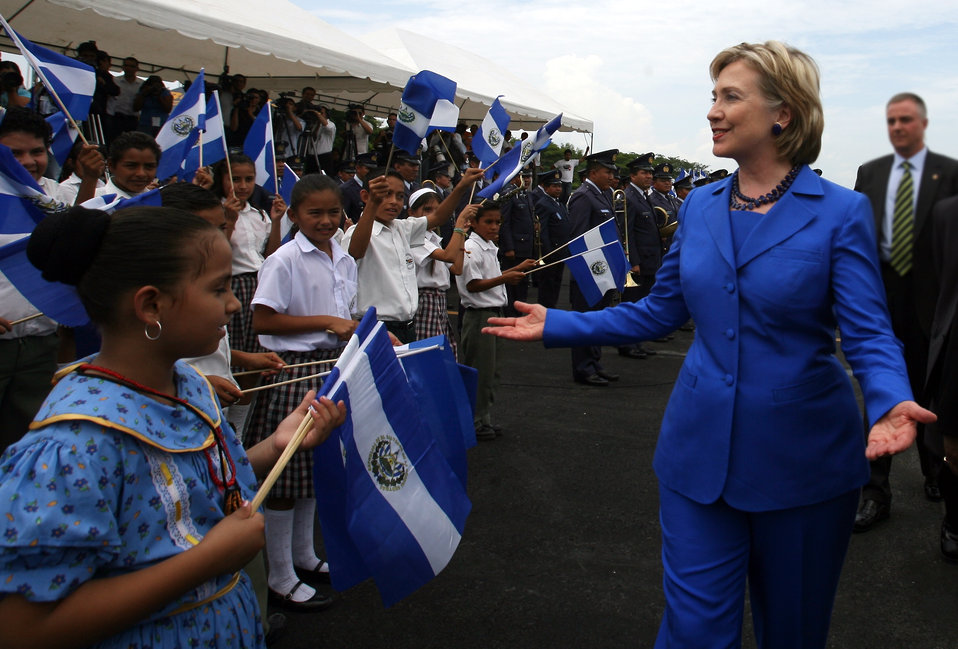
Secretary Clinton Arrives in El Salvador

U.S. Secretary of State Hillary Rodham Clinton greets Salvadoran school children upon her arrival at Comalapa International airport in El Salvador May 31, 2009. Secretary Clinton leads the U.S. Delegation that is attending the inauguration of Salvadoran President Mauricio Funes, who takes office on June 1st.